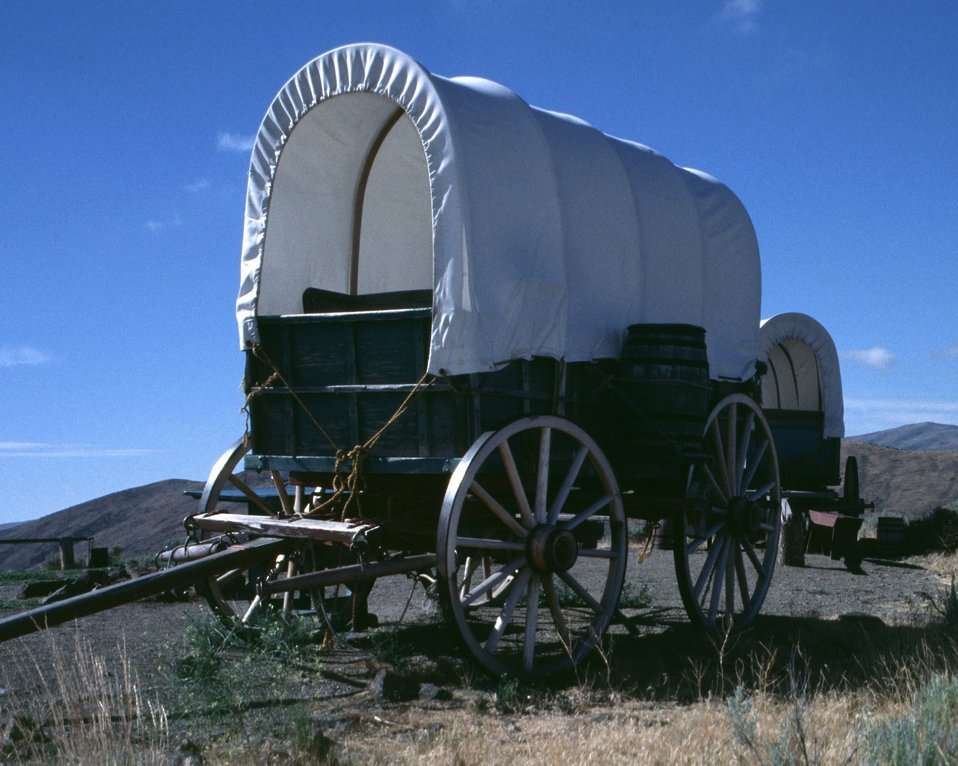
Covered wagons at NHOTIC encampment.